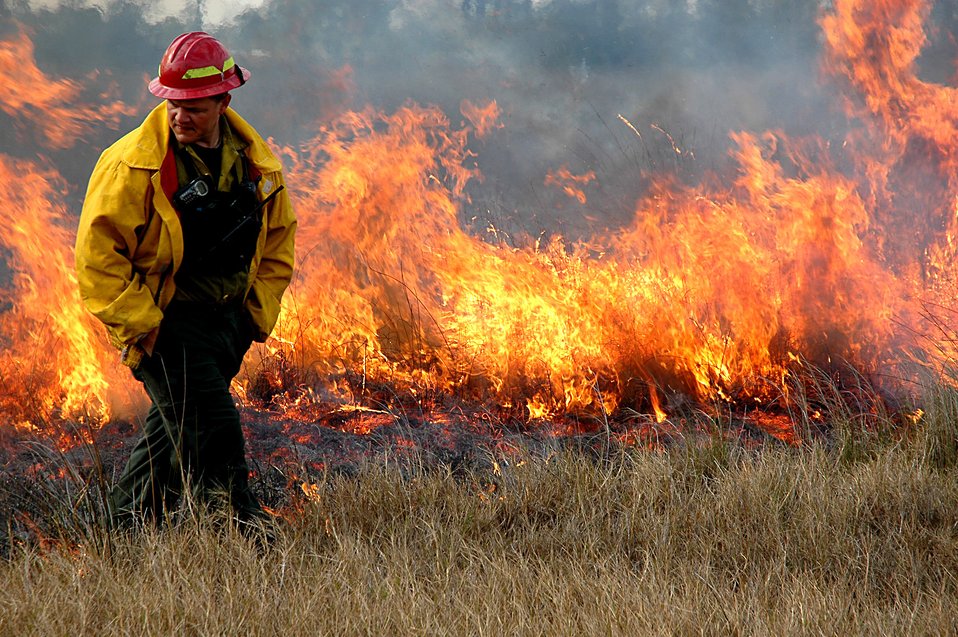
Fighting fire with fire

Terry Walter monitors a control burn May 14 at Tyndall Air Force Base, Fla. Control burns are being conducted in several areas on base in an effort to increase fire safety and improve wildlife environments. Mr. Walter is the wild land fire program manager for the 325th Civil Engineer Squadron.